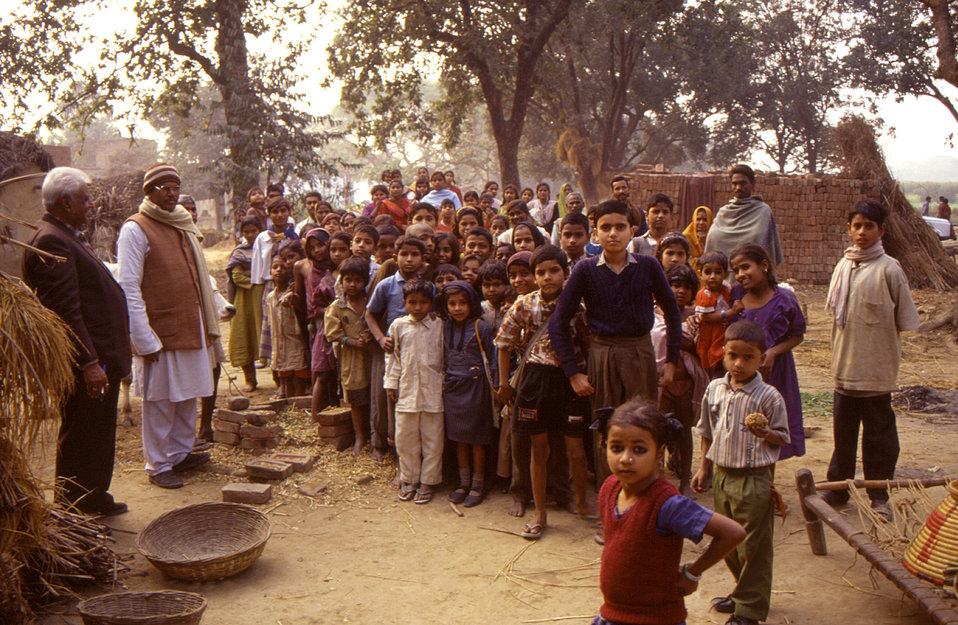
This 2000 image depicted public health practitioners, and STOP Transmission of Polio (STOP) team members in the process of visiting a rural village, in order to check up on the inhabitants, and to follow up on suspected cases of Acute Flaccid Paralysis (AFP), or frank poliomyelitis. The arrival of visitors to a village was always greeted by a large crowd of curious residents, many of whom were young children. This was one of many photographs provided by Chris Zahniser, B.S.N., R.N., M.P.H., a STOP immunization initiative team member and photographer who was assigned to the state of Uttar Pradesh in northern India, and spent three months working in the Districts of Gorakhpur and Deoria.